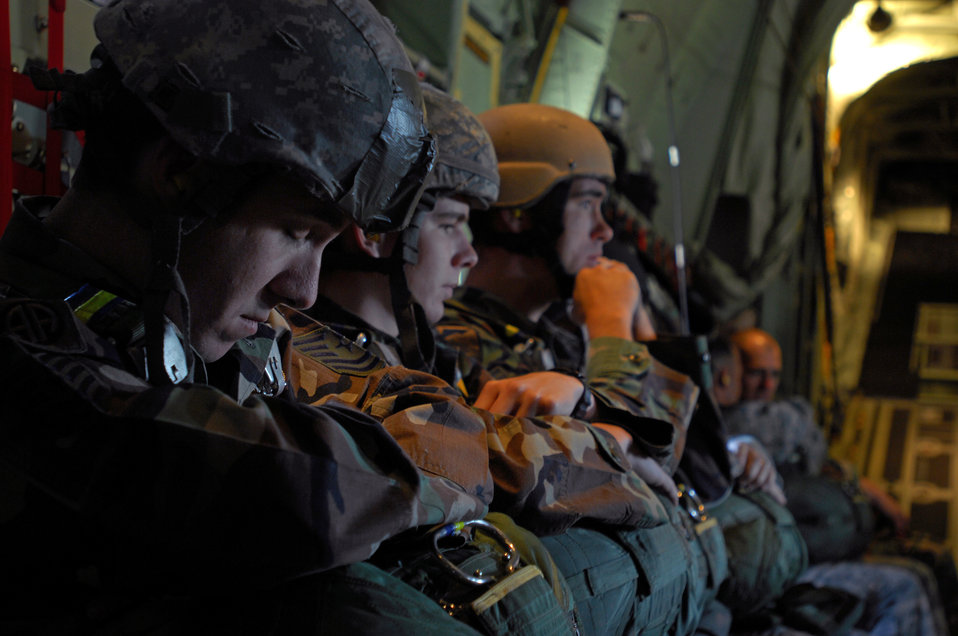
Airmen, Soldiers make first jump from Ramstein C-130J

Airmen and Army paratroopers prepare for take off on a new C-130J Super Hercules for the first personnel drop from Ramstein Air Base, Germany.